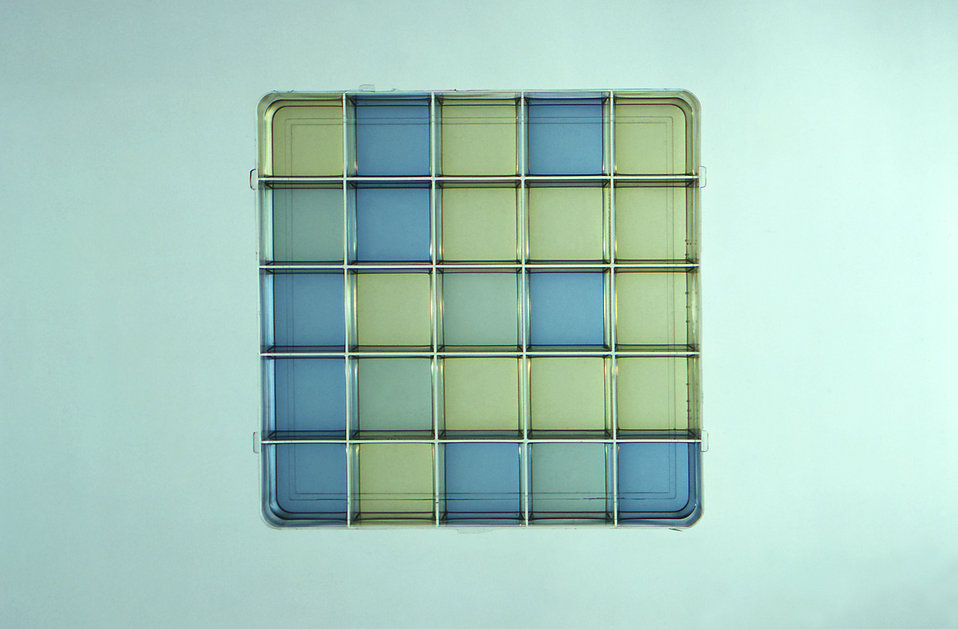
This image depicts a 25-well plate, which had been used to conduct a series of unknown biochemical tests, the results of which were displayed as changes in coloration of the solution within each well.